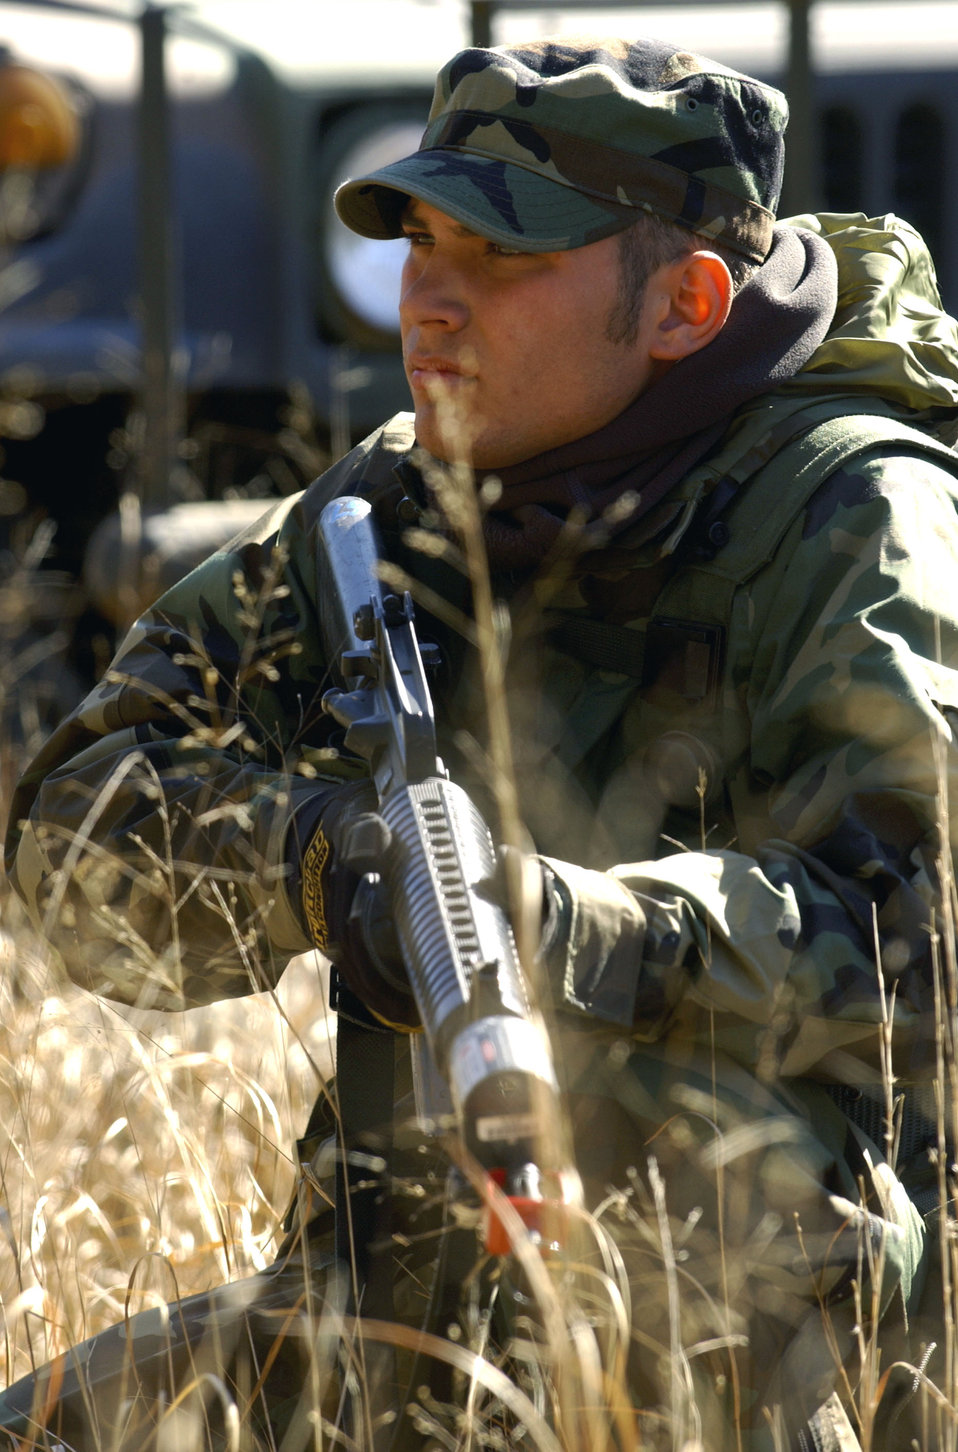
Eye of the tiger

LAKEHURST NAVAL AIR STATION, N.J. -- Airman Zachary Nelson secures a perimeter during a weapons cache exercise as part of Eagle Flag here Feb. 23. Eagle Flag is a 12-day field training exercise involving more than 400 participants aligned with air expeditionary force rotations to provide training for combat support forces. The training provides instruction on opening the air base, maintaining command and control structure and the generation of mission capable forces. The exercise will integrate Air Force expeditionary specialties into one military operation striving toward a single mission. Airman Nelson is assigned to the 49th Communications Squadron at Holloman Air Force Base, N.M.